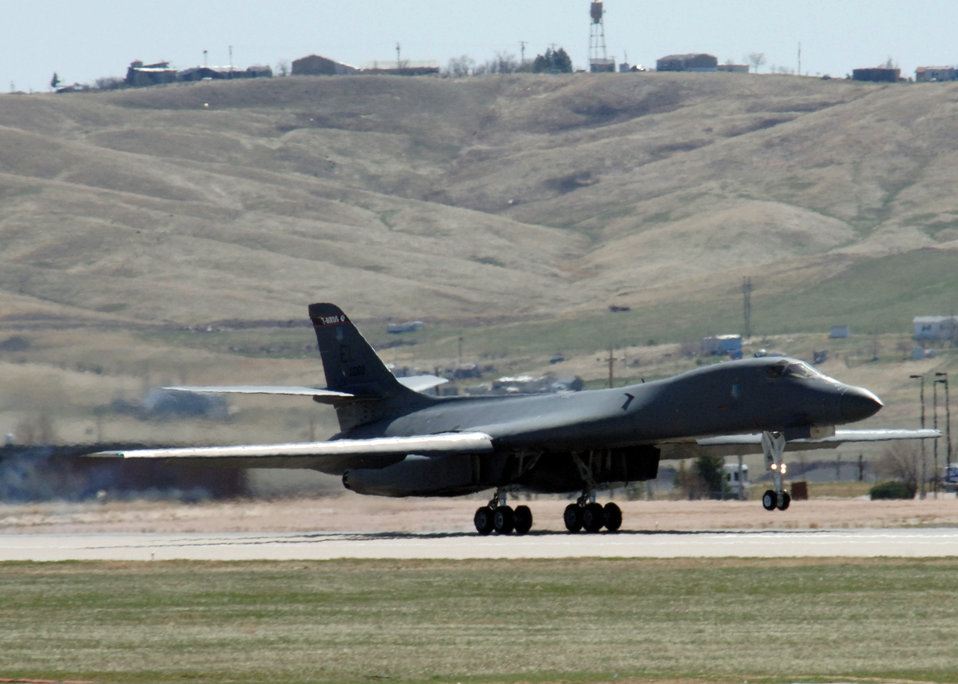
'Touch and go'

A B-1 Lancer from the 28th Bomb Wing practices